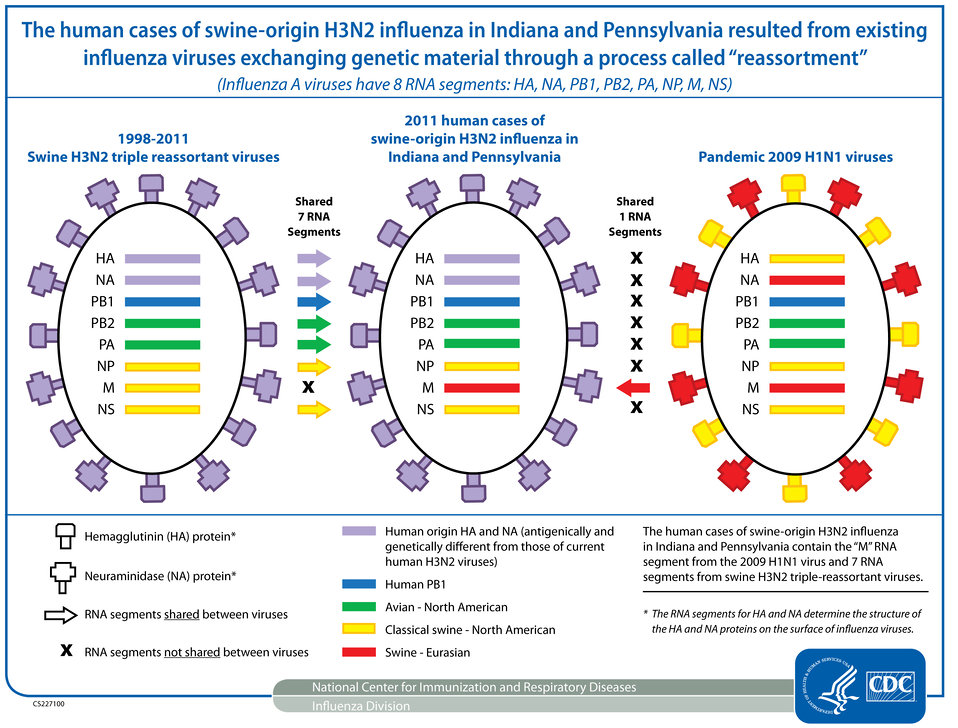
This diagram depicts how the human cases of swine-origin H3N2 influenza virus reported in Indiana and Pennsylvania in September 2011 resulted from the reassortment of two different influenza viruses. The Diagram shows three influenza viruses placed side by side, with eight color-coded RNA segments inside of each virus. Note: All influenza viruses contain 8 RNA segments. These RNA segments are labeled HA (hemagglutinin), NA (neuraminidase), PB1, PB2, PA, NP, M and NS.